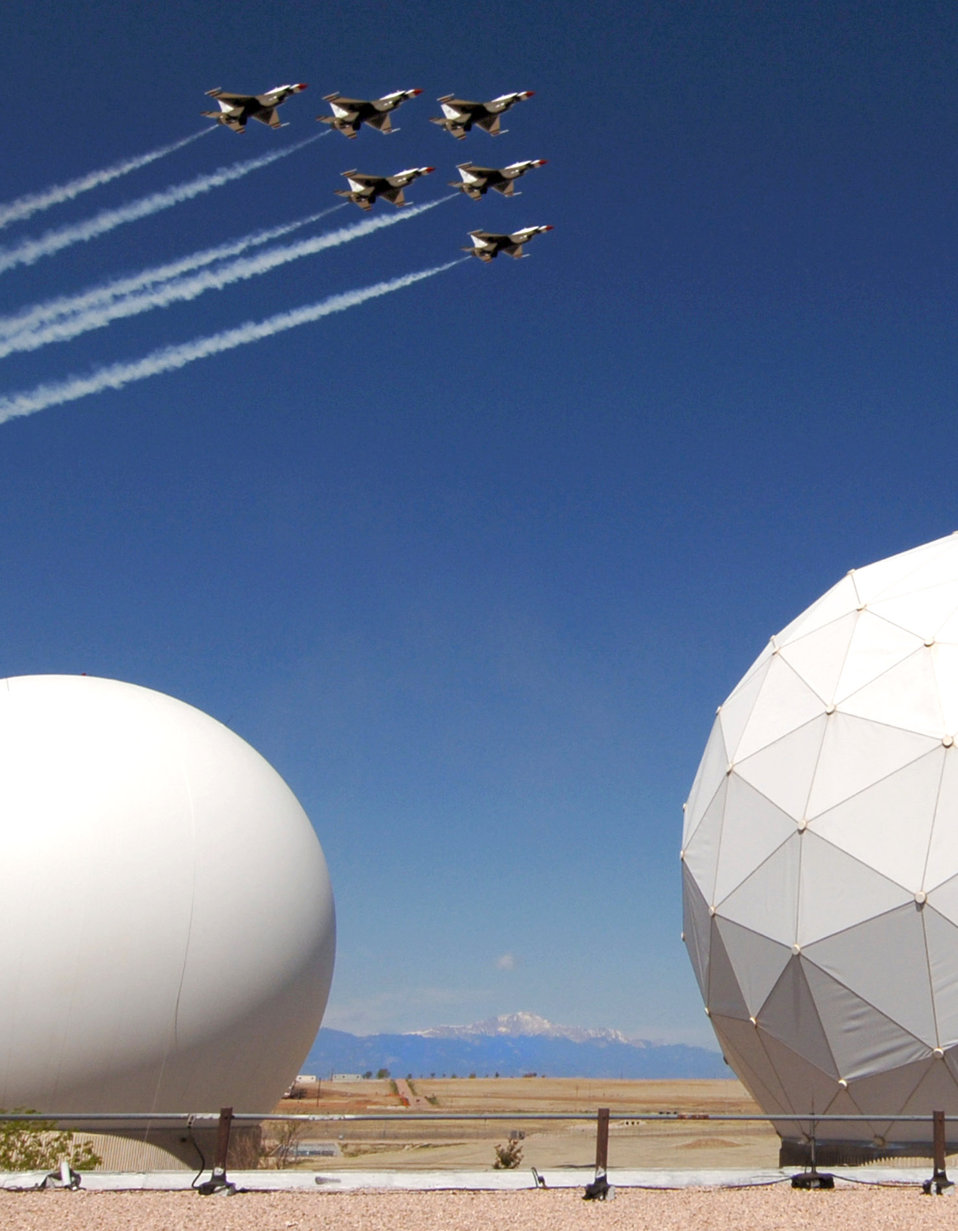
Airpower meets space power over Schriever Air Force Base, Colo., as the U.S. Air Force Thunderbirds fly over the base May 25. The Thunderbirds were in Colorado Springs to perform at the Air Force Academy graduation ceremony May 28. Below them are the twin radomes of the Colorado Tracking Station, part of the Air Force Satellite Control Network; in the background is Pikes Peak, a famous Colorado landmark.